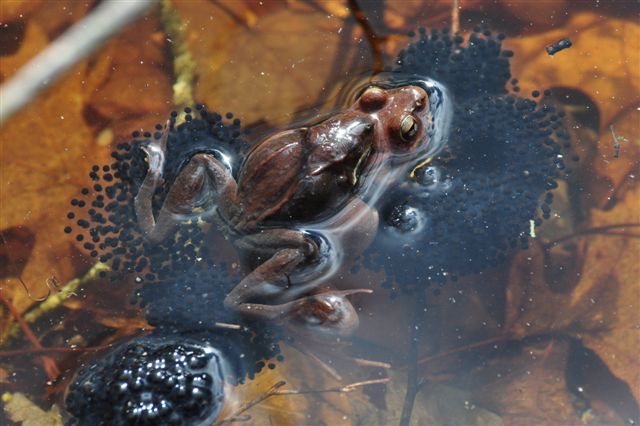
frog with eggs in a vernal pool

Ninigret National Wildlife Refuge, RI